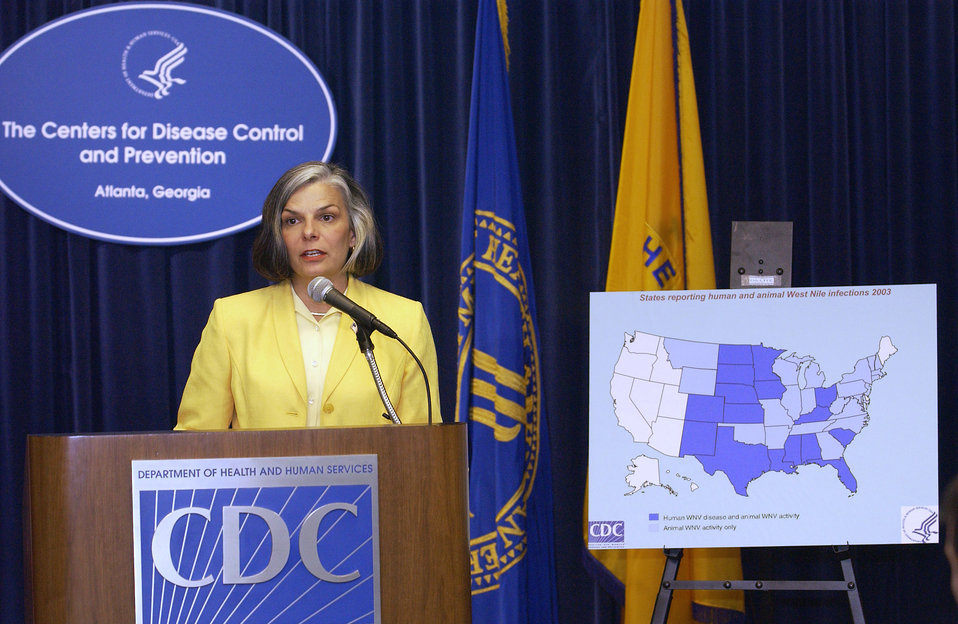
This was former CDC Director (2002 - 2008), Julie Louise Gerberding, MD, MPH, speaking at an August, 2003 West Nile Virus press briefing.